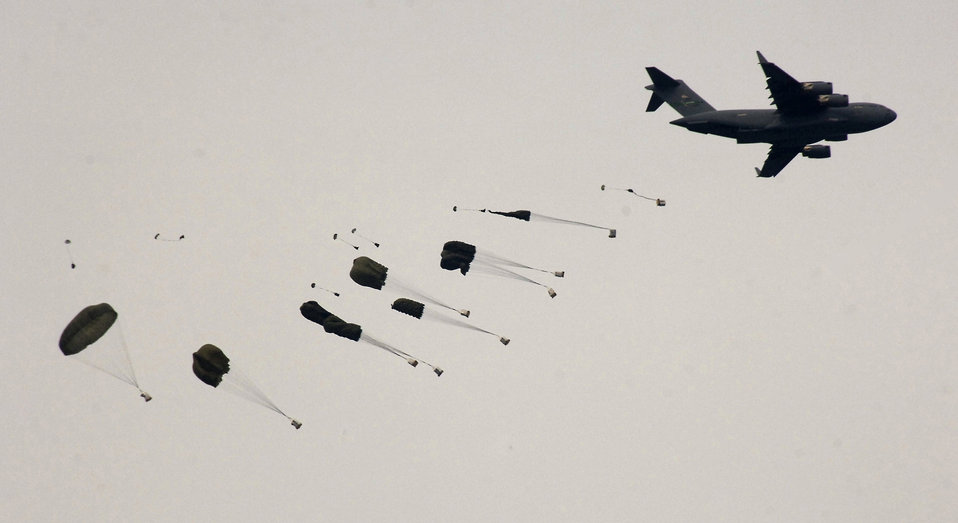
C-17 Airdrop

On Jan. 18, 2010, a C-17 Globemaster III, like the aircraft pictured here, delievered more than 69,000 pounds of food and water to earthquake victims in Haiti.